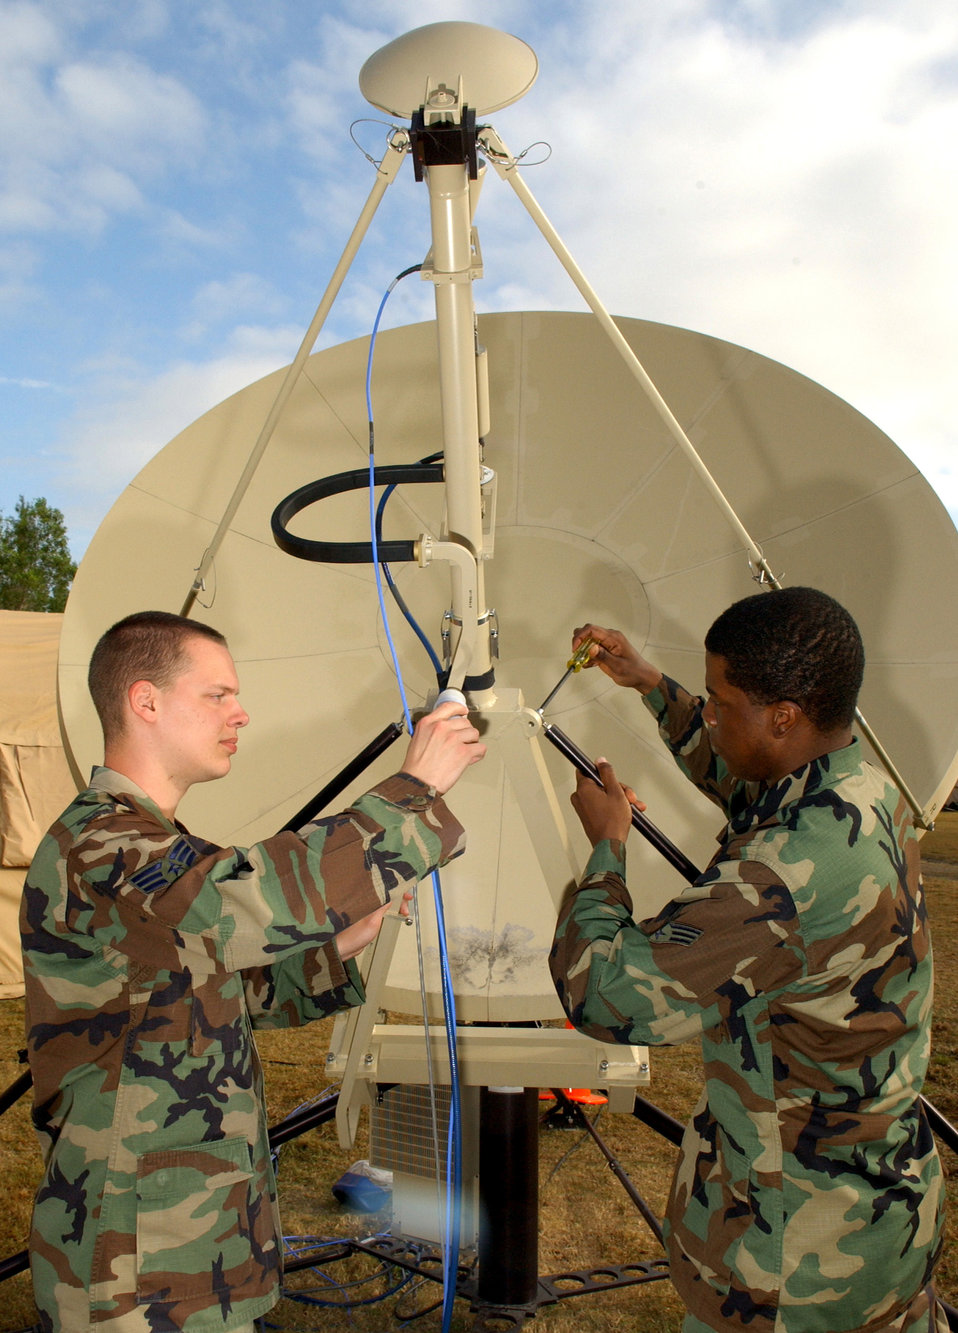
Jump Start

Senior Airmen Michael Mikkelson and Ryan Nicholas adjust the satellite stabilizer during Exercise Jump Start on Monday, April 10, 2006, at Homestead Air Reserve Base, Fla. The communications exercise is designed to familiarize troops from Reserve, Guard and active military units with communications equipment they wouldn't normally use. Both Airmen are satellite technicians with the 514th Communications Squadron at McGuire Air Force Base, N.J.